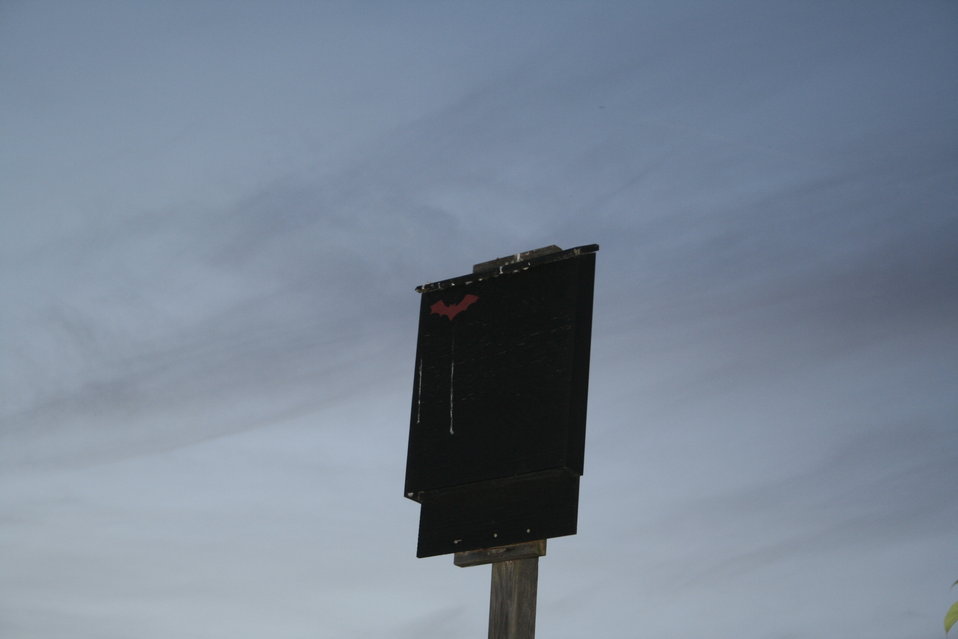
Bat house

Bat houses were erected to provide alternative habitat for a maternity colony of little brown bats while covered bridge was being restored